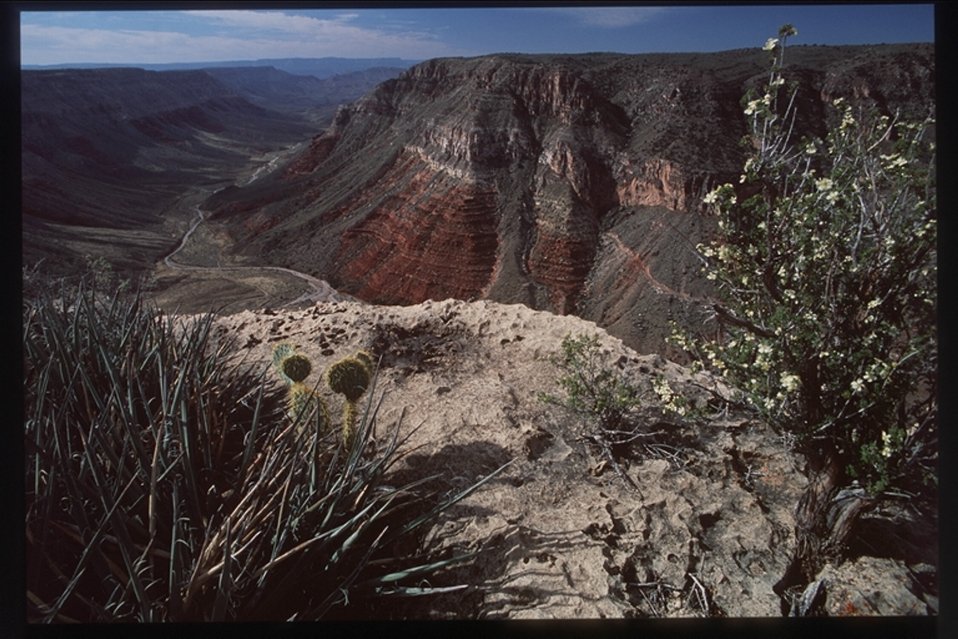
The Grand Canyon Parashant National Monument is full of breathtaking views like this one.